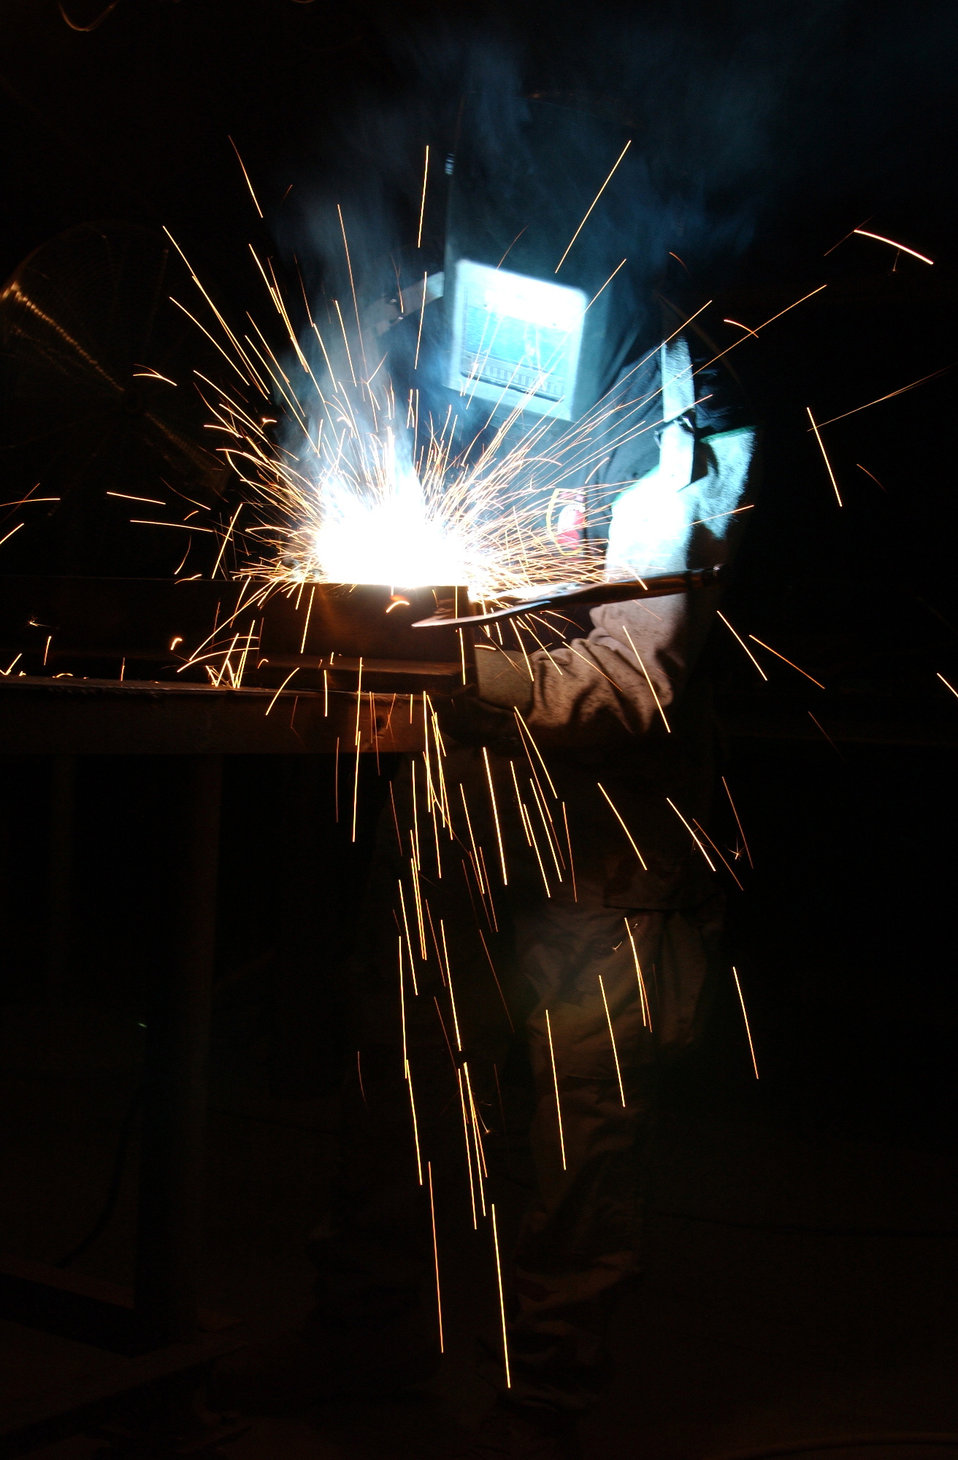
Let the sparks fly

OPERATION IRAQI FREEDOM (AFPN) -- Staff Sgt. Trevor Makin welds a bracket for a munitions storage container. He is deployed from Malmstrom Air Force Base, Mont., to the 332nd Expeditionary Civil Engineer Squadron at a forward-deployed location supporting Operation Iraqi Freedom.